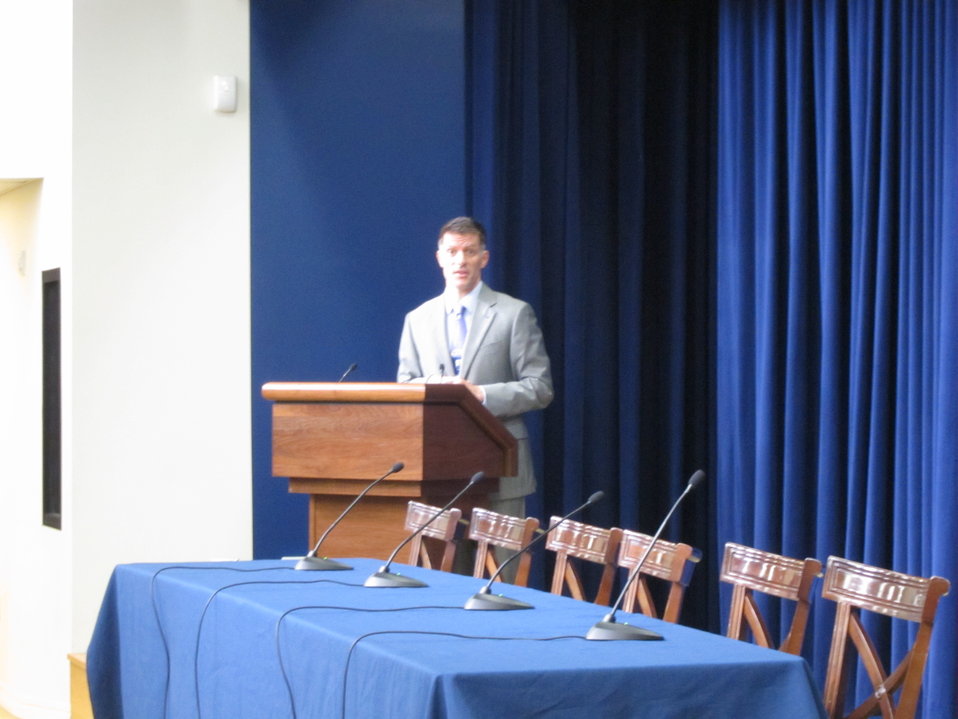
WH 2012 World Hepatitis Day Event